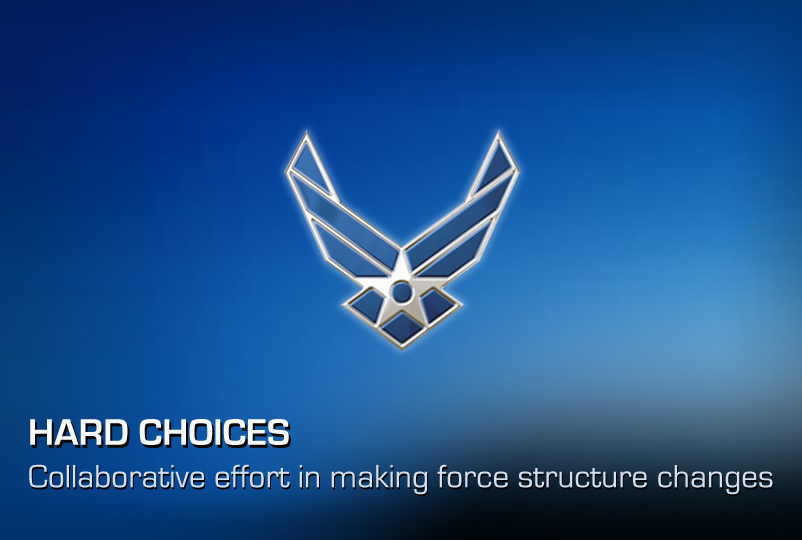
Hard Choices